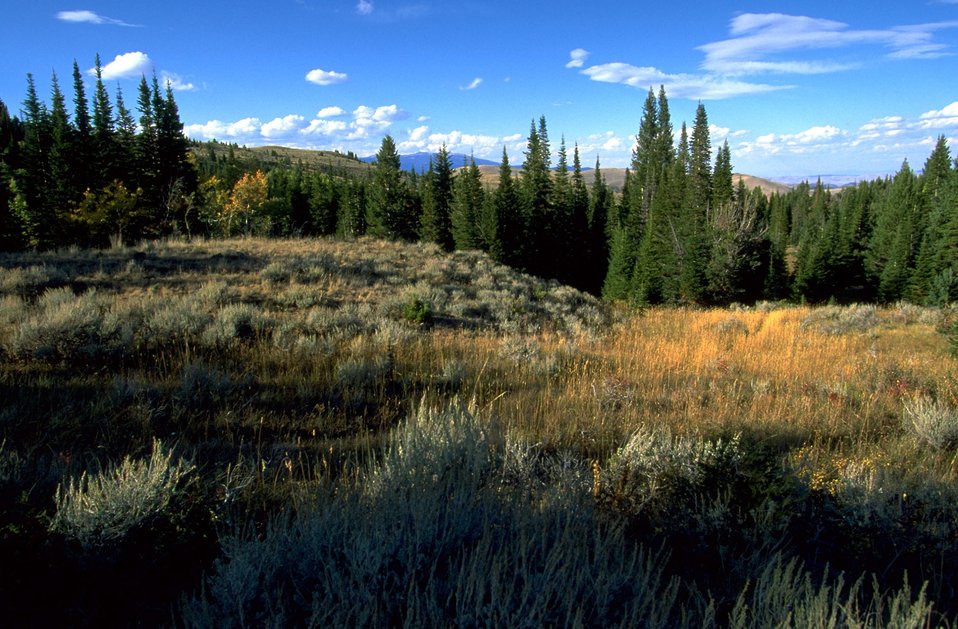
Colorful view of trees, sagebrush, hills and grass